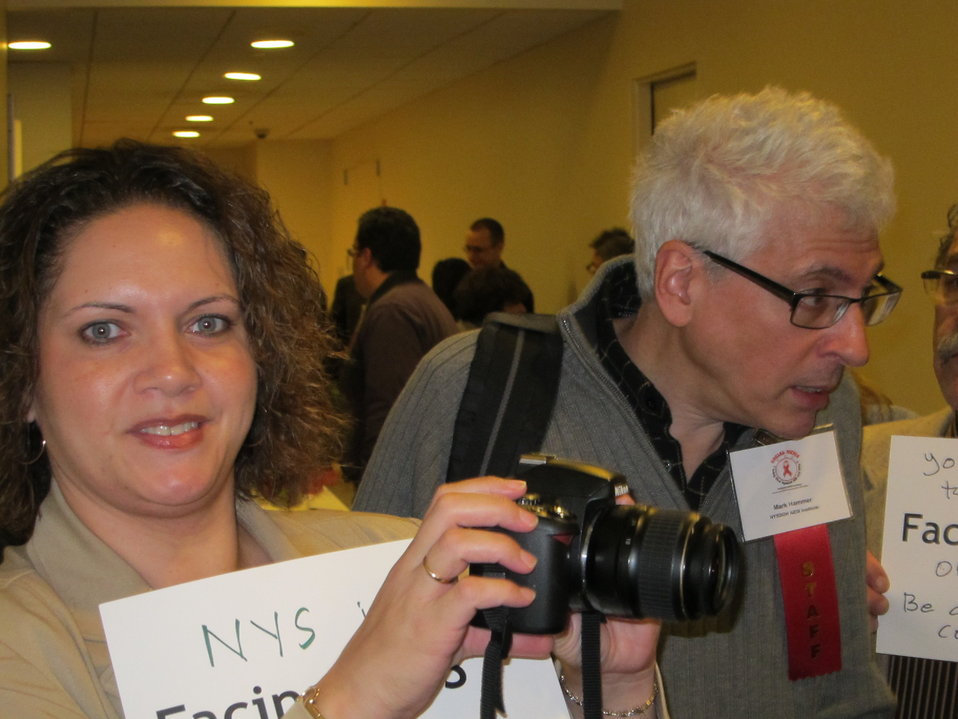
Facing AIDS event at Going Viral - NYC 2010